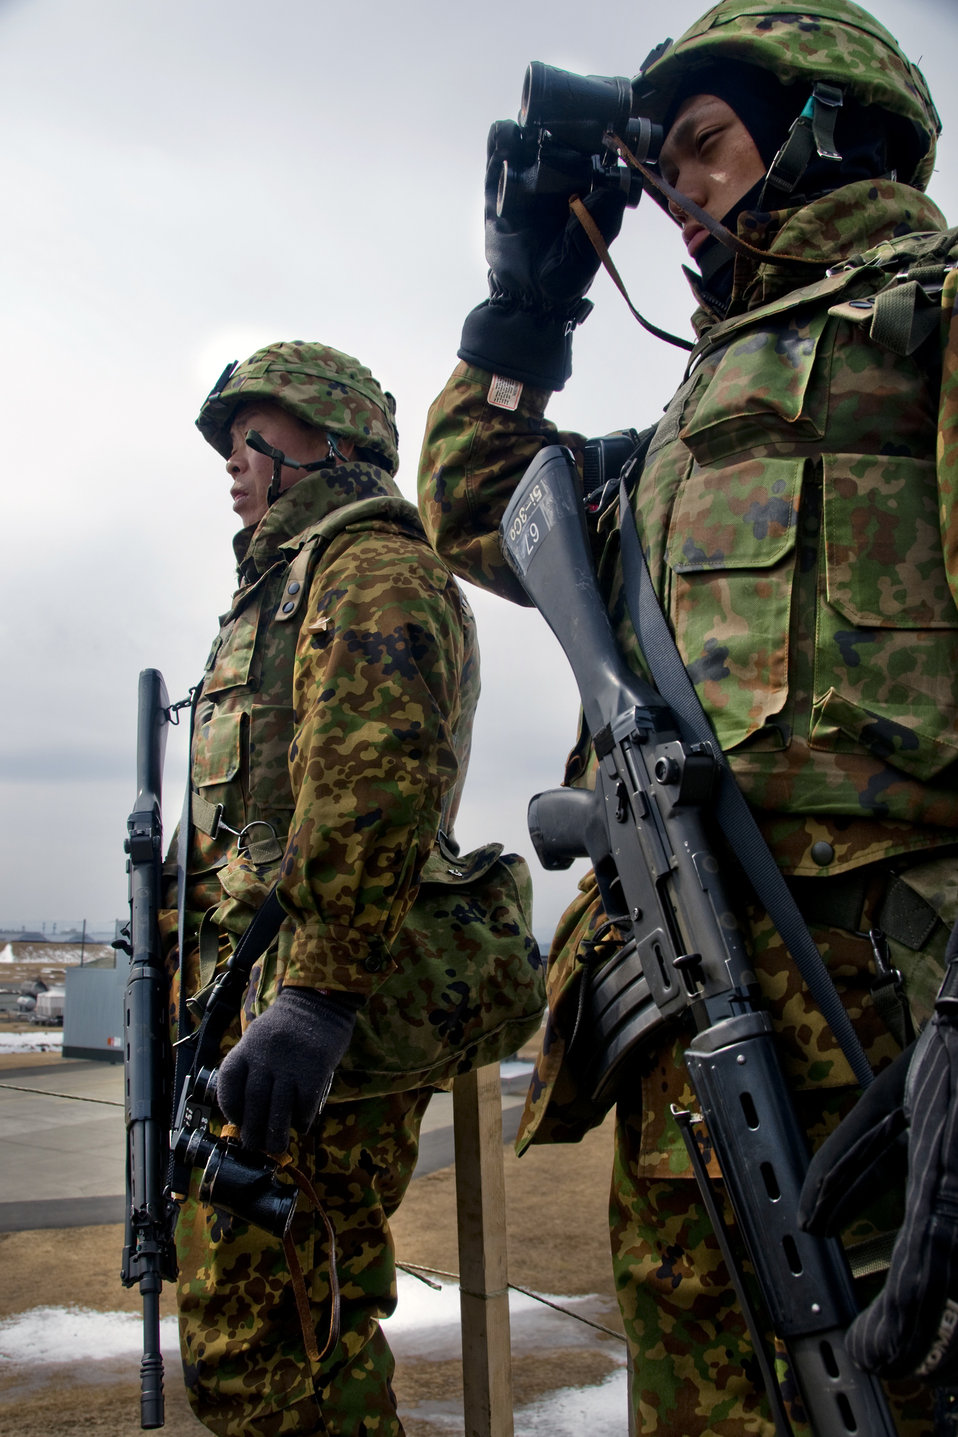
Japan, U.S. forces come together to Guard, Protect

Two members of the Japan Ground Self-Defense Force 9th Division, 5th Infantry Regiment, watch over a specified area during a March 13 exercise at Misawa Air Base, Japan. The JGSDF troops were part of a 24-hour Guard and Protect Exercise that partnered them with the Japan Air Self-Defense Force 3rd Air Wing and the U.S. Air Force 35th Security Forces Squadron.